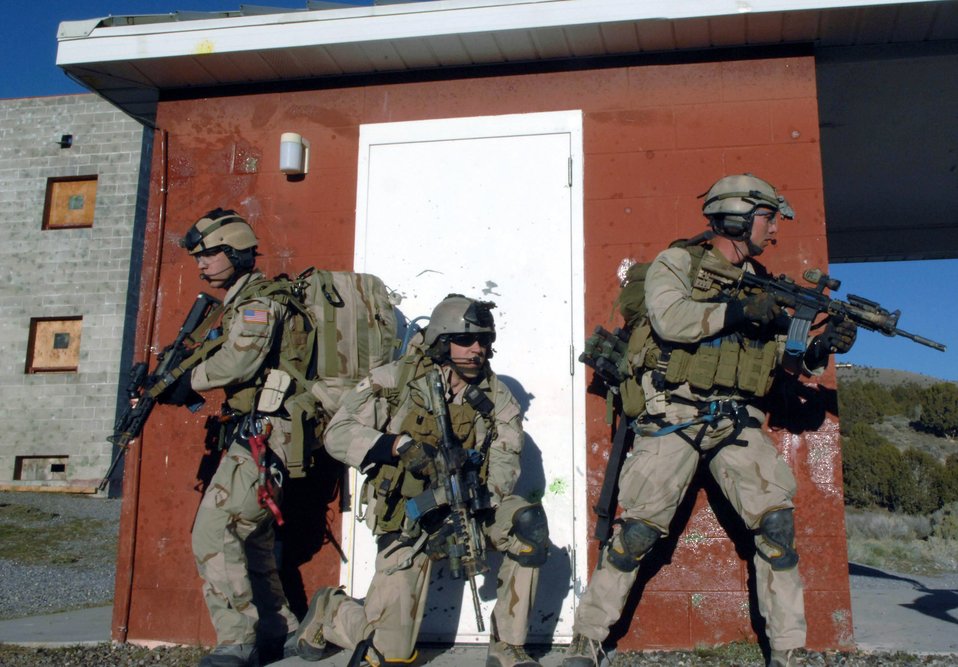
Combat search and rescue training in Utah

Pararescuemen make an urban village assault during an extraction of a simulated downed pilot during a combat search and rescue integration exercise Nov. 8 at Camp Williams, Utah. The pararescuemen are from the 58th Rescue Squadron, Nellis Air Force Base, Nev. Members of the 34th Weapons Squadron from Nellis AFB led the search and recovery training. The exercise expanded the integration with Utah's 211th Aviation Group AH-64 Apache Joint Rotary Wing, 4th Fighter Squadron F-16 Fighting Falcon assets from Hill AFB, Utah, and special operations forces. Exercise participants also conducted extensive joint combat search and rescue operations against surface-to-air threats. The exercise is being run held Nov. 6 through 15.